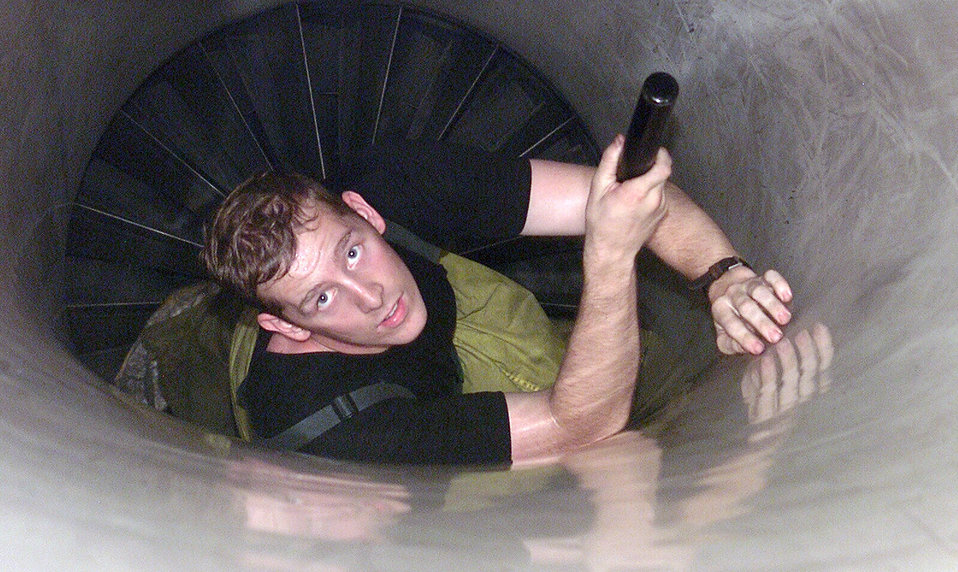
Out of the intake

OSAN AIR BASE, South Korea -- Staff Sgt. George McMillen crawls out of an F-16 Fighting Falcon engine intake after conducting a post-flight engine inspection during exercise Beverly Bulldog O3-04 here July 21. Sergeant McMillen is a member of the 36th Aircraft Maintenance Unit.